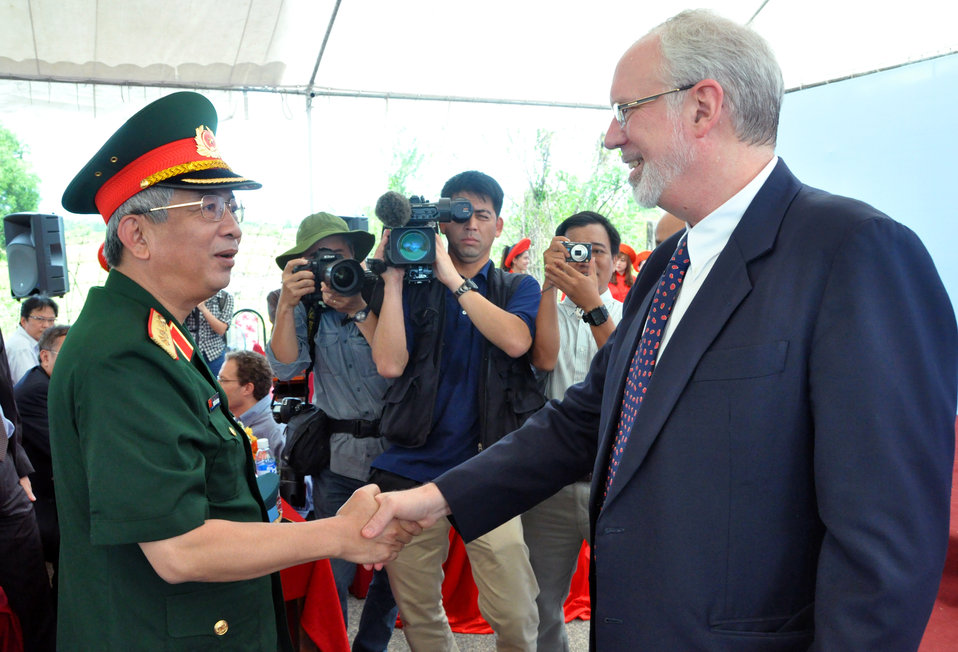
Lt. Gen. Nguyen Chi Vinh, Vice Minister of National Defense, greets U.S. Ambassador David B. Shear at the Environmental Remediation of Dioxin Contamination at Danang Airport Project Launch

Danang, August 9, 2012